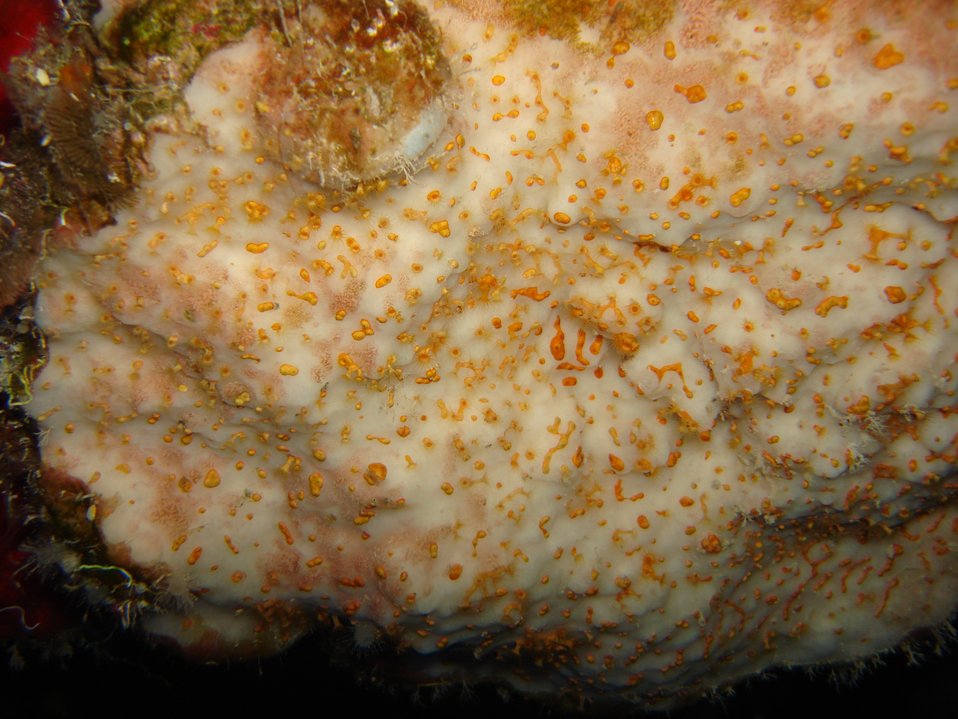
Cake shaped sponge (Topsentia ophiraphidites)